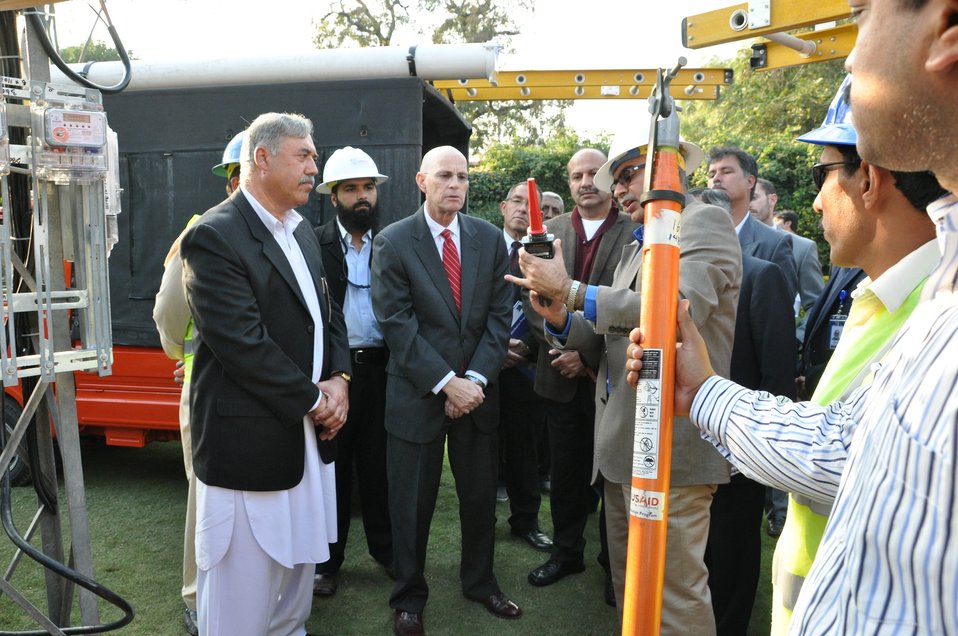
Breifing about linemen tools and loaders (6)